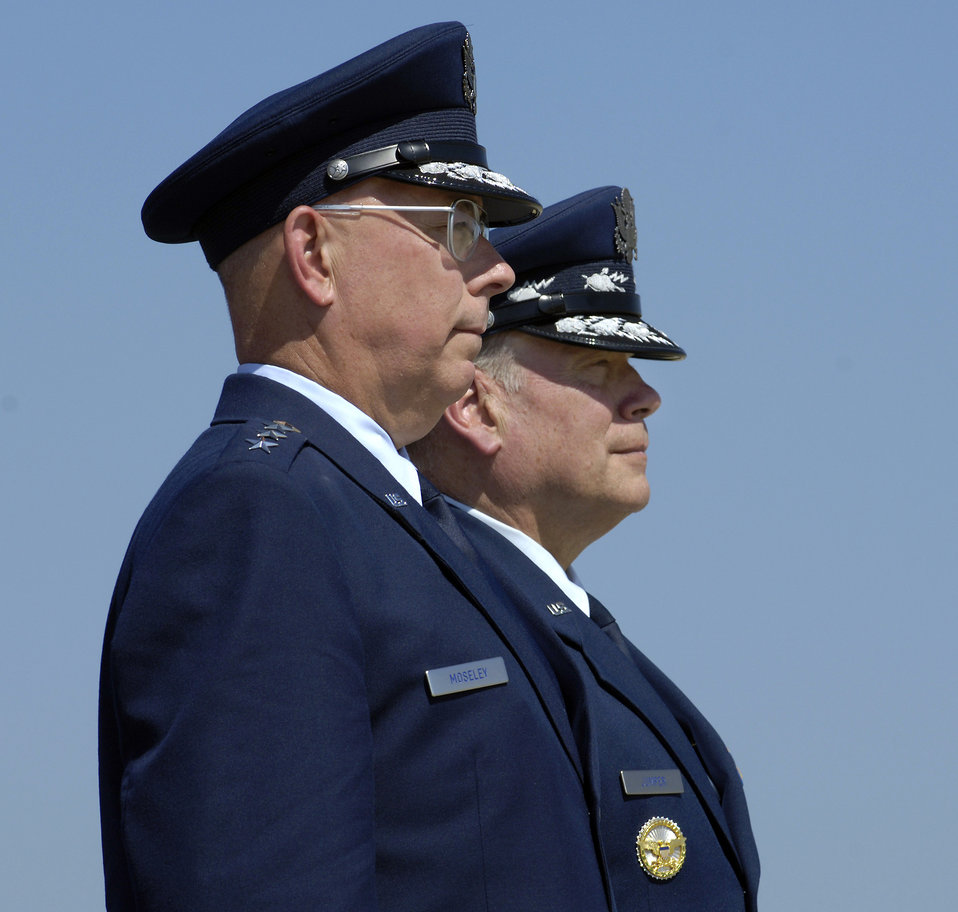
General Moseley swears in as Air Force's 18th chief of staff

ANDREWS AIR FORCE BASE, Md. - Incoming Air Force Chief of Staff Gen. T. Michael Moseley (left) and outgoing Air Force Chief of Staff Gen. John P. Jumper watch as Air Force troop formations pass in review during a ceremony here Sept. 2. General Jumper served in the Air Force for 39 years. General Moseley served as Air Force vice chief of staff before being sworn in as the 18th Air Force chief of staff.